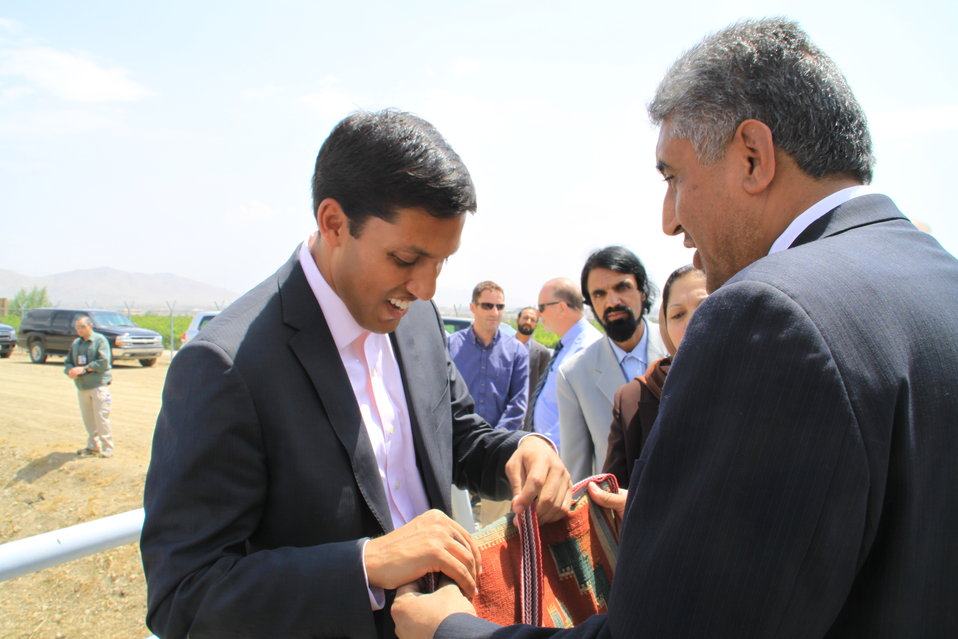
Badam Bagh Farm